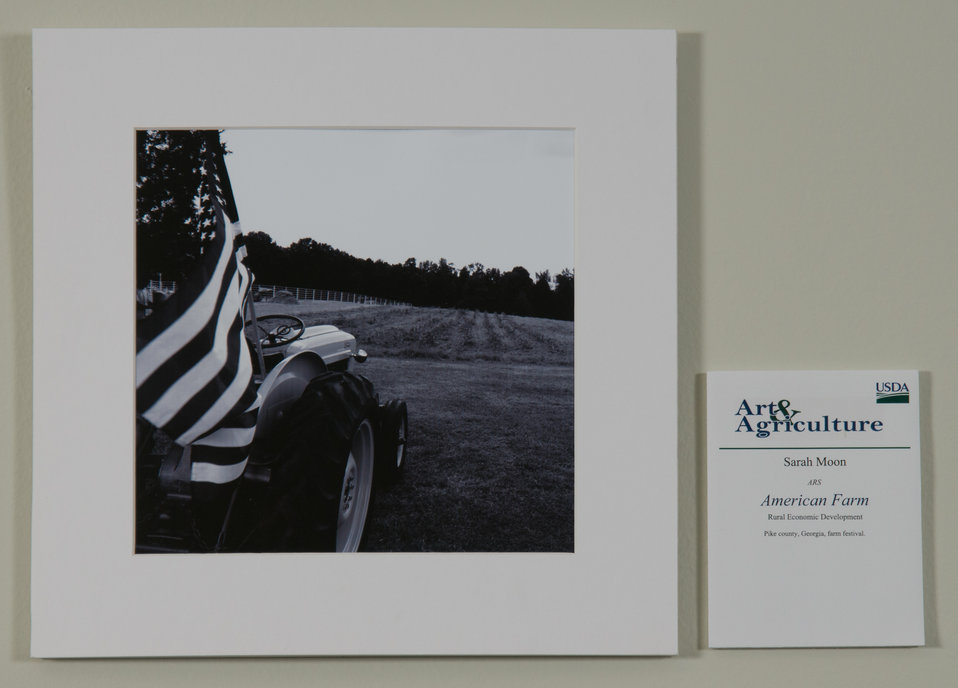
Online Viewer's Choice entries of the 2013 Art & Agriculture, Tuesday, July 9, 2013, in the South Building, Washington, D.C. Themes were expressed by employees from across the department and the contest was open to full-time and part-time USDA employees. Winning artwork will be displayed till the end of the year. U.S. Artistic expression is a creative outlet that is vital for an individual to grow and develop.